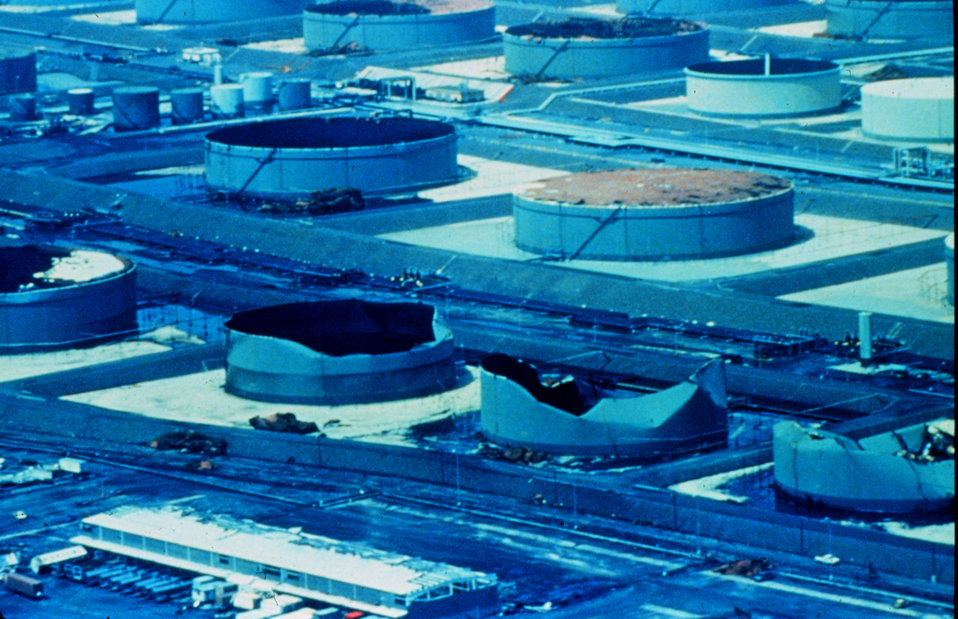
Collapsed oil tanks at Hess Oil Refinery on St. Croix Tanks collapsed because of wind pressure causing oil spill Hurricane Hugo